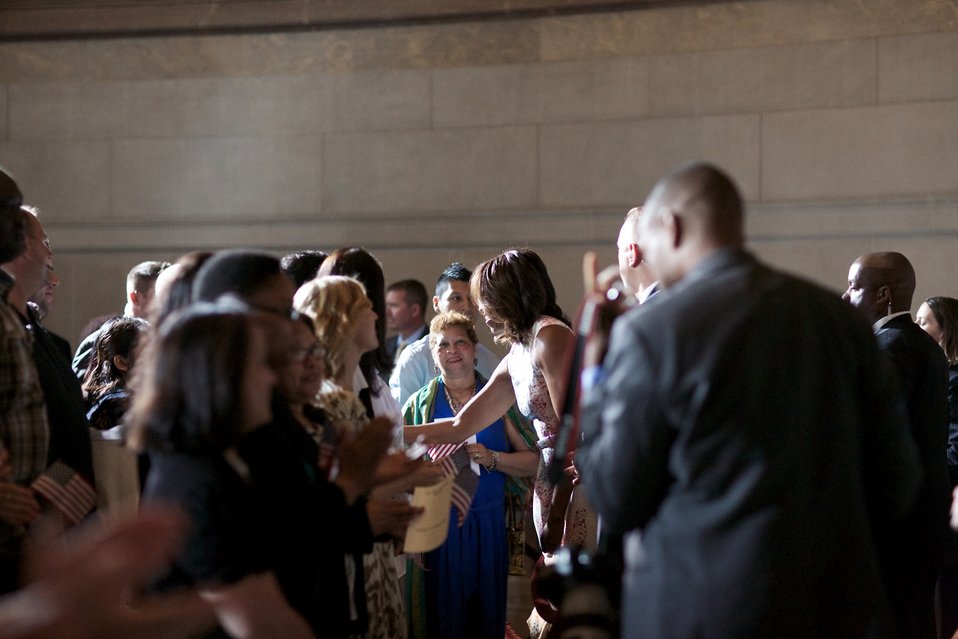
Naturalization Ceremony with Michelle Obama